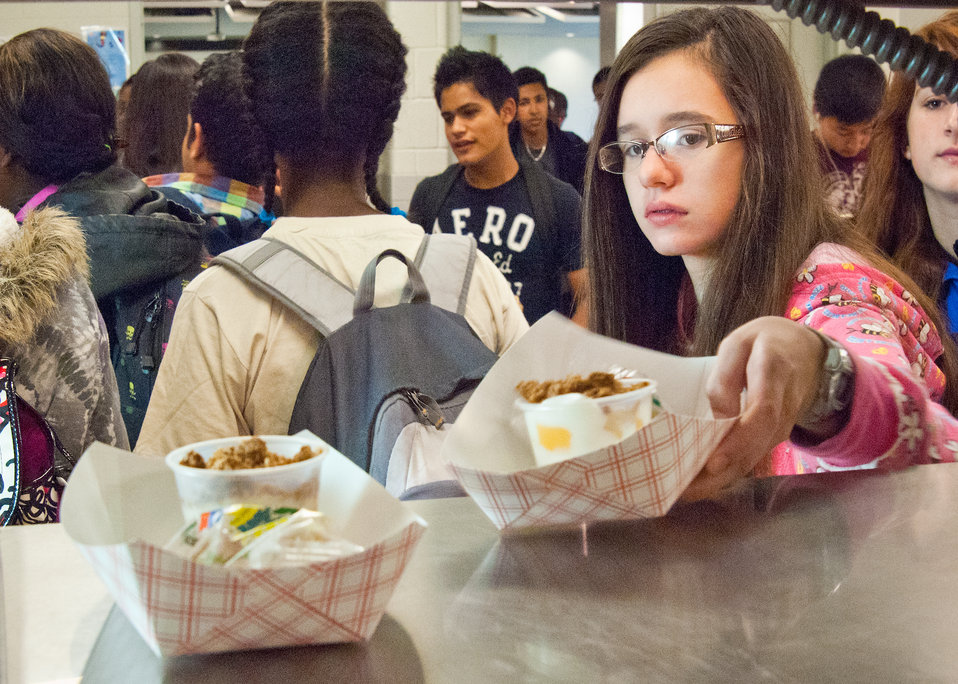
20111025-FNS-RBN-School Lunch

Students at Washington-Lee High School, in Arlington, VA, select a parfait of yogurt, fruit and granola along with a blueberry muffin for breakfast on Wednesday, October 25, 2011. The school breakfast and lunch are prepared by Arlington Public Schools, Food and Nutrition Services. The National School Lunch Program is a federally assisted meal program administered by the United States Department of Agriculture, Food and Nutrition Service operating in public, nonprofit private schools and residential child care institutions. It provides nutritionally balanced, low-cost or free lunches to children each school day.